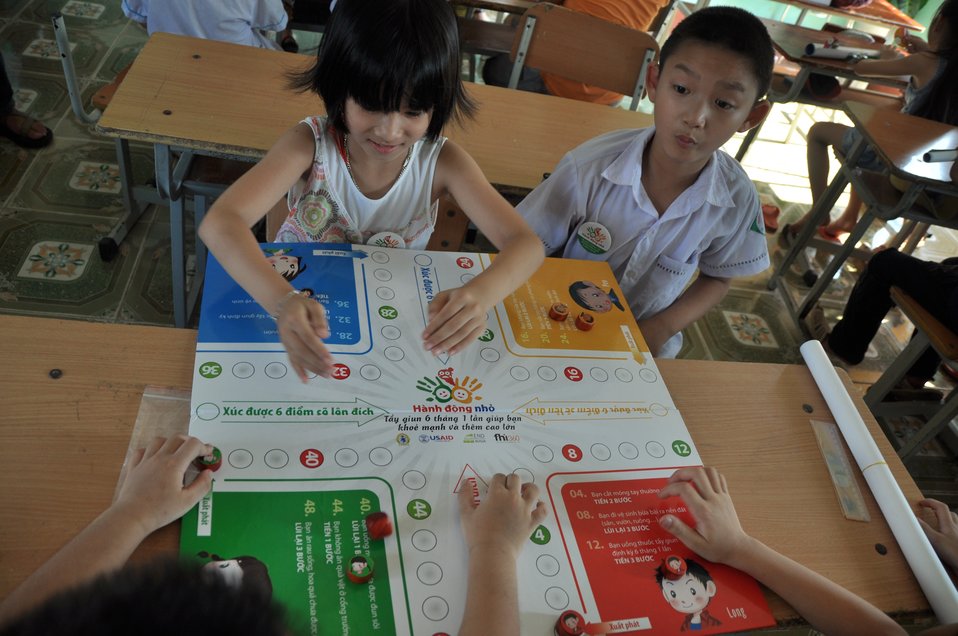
USAID supports deworming education and medication distribution in Bac Giang Province

May 20, 2013